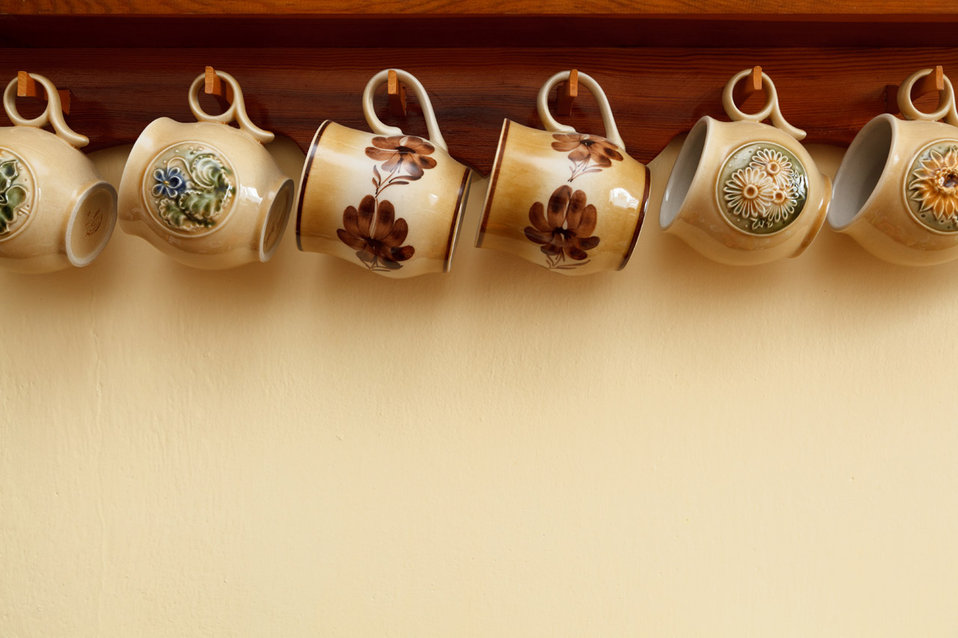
Hanging cups

Hanging ceramic cups in a row with some copyspace.